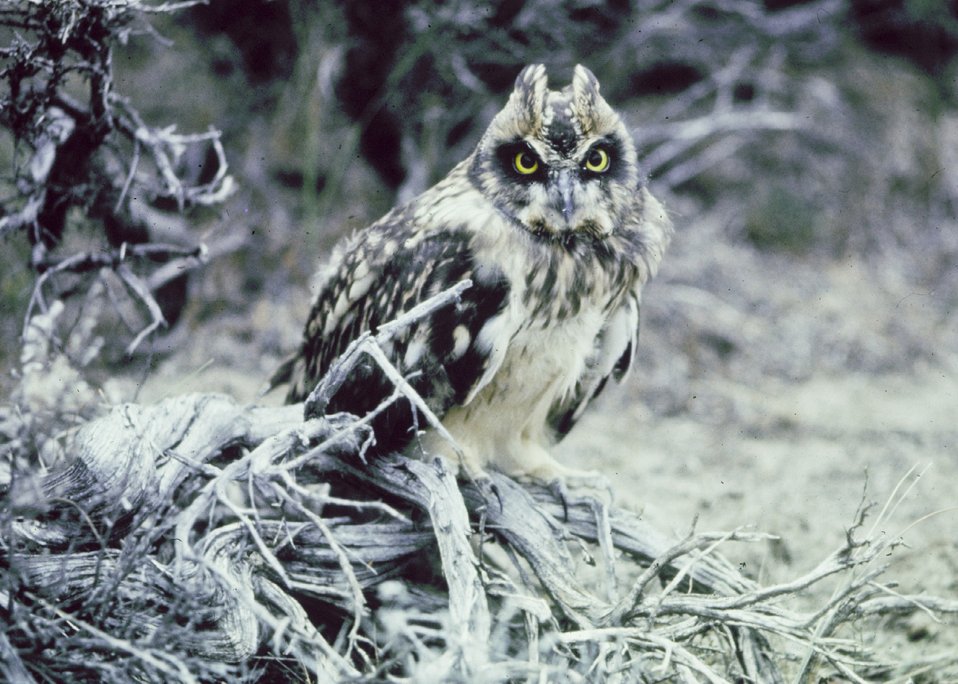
A Great Horned Owl sitting on some brush.